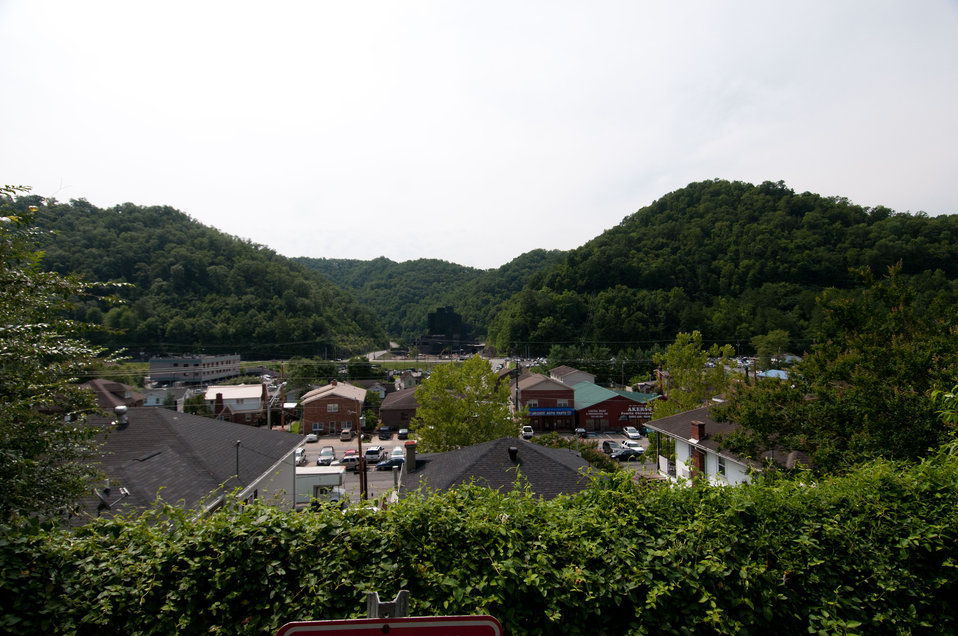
From across the horseshoe shaped town of Pikeville, KY, various buildings, parking lots, temporary walkways, and above ground construction of the Pikeville Medical Center (PMC) expansion project, on Tuesday, July 12, 2011, in Pikeville, KY. After months of infrastructure construction and rain delays, one of Kentucky’s largest American Recovery and Reinvestment Act (ARRA) projects is under way. The $44.6 million Community Facilities Loan will finance construction of a new medical office building and parking garage. The new medical office building will house outpatient surgery, endoscopy, surgical support and provide exam, waiting and office space for 23 primary and specialty care physicians. It also will contain a medical research center to support existing research – in conjunction with Pikeville College – on health disparities, genetic research related to the prevalence of cancer and other areas, including drug and treatment trials. The new parking garage with more than 1,000 spaces will be built adjacent to the new medical building, eliminating the need to shuttle patients back and forth from remote parking areas. The new garage will provide closer and easier proximity to medical and hospital services for all patients.
Wayne Rutherford, County Judge-Executive for Pike County, says funding from ARRA is a boon for his county because it will create jobs.

“This is great for Pike County’s economy. We know we have a great hospital, and with this support, it will be even better,” said Rutherford. “The unemployment rate here is above the state average and this will stimulate jobs. There will be construction, which means lots of jobs on the front end – and even more once it is built.”

Pike County is one of Kentucky’s persistent poverty counties and the current medical facility provides health care services for a rural population of more than 68,000. This project will create 1,430 direct and indirect construction jobs, in addition to 97 long-term jobs. It is scheduled to be completed in December 2012.

“This project is a prime example of the ARRA monies being utilized for much-needed health care facility expansion in an economically-depressed region of Eastern Kentucky and Appalachia,” said Tom Fern, State Director for Rural Development in Kentucky. “This hospital has received national recognition for its quality of care, and this money will allow them to expand and build upon their success and continue providing quality health care services to the region.”

PMC was named National Hospital of the Year by the American Alliance of Healthcare Providers in November 2009. The hospital was among 400 elite health care facilities to apply for this prestigious honor. To earn this recognition, PMC competed against more than 400 hospitals, including the Mayo Clinic, the John Hopkins Hospital, Cedar-Sinai Medical Center, the Cleveland Clinic, Duke University Medical Center and Vanderbilt University.

Pikeville City Manager Donovan Blackburn said the medical center is the largest employer in Pikeville and contributes nearly $2 million to the city through the payment of occupational taxes. He went on to say that Pikeville Medical’s success is also the city’s success because as other cities struggle with dwindling revenues, Pikeville has actually seen growth.

“This is a regional medical center that is very important to the city. Pikeville is a legal, financial and education hub for Eastern Kentucky and a gateway to rural communities in Virginia and West Virginia. There are half a million within a 50-mile radius – so it’s not just local people that depend on this facility,” said Blackburn. “From a regional standpoint it adds volume from a jobs standpoint. Everybody in this county knows someone or has family that works for Pikeville Medical Center.
“People in this area used to have to go out of the area for good jobs and quality medical services, but Pikeville Medical has changed that,” added Blackburn. 'And it has impact on other parts of the city’s economy – hotels, restaurants and retail. It increases the quality of life tenfold.”

The Recovery Act was designed to spend money gradually over time in order to sustain a true recovery – with peak spending to occur early this year. While the experts agree that ARRA is already responsible for creating or saving approximately two million jobs, about 75 percent of recipients that reported on their Recover Act spending indicated their projects are less than half complete, meaning there is even more job impact from those dollars to come.
USDA Photo by Lance Cheung.
.